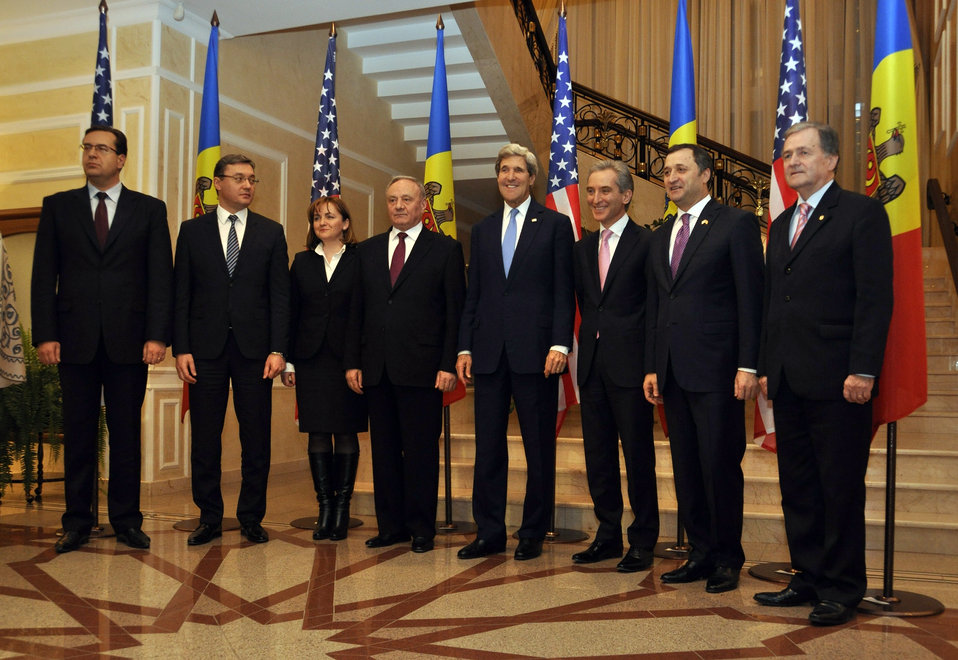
Secretary Kerry Poses for a Photo With Moldovan Leaders

U.S. Secretary of State Kerry poses for a photo, from left to right, with Democratic Party leader Marian Lupu, Parliament Speaker Igor Corman, Foreign Minister Natalia Gherman, President Nicolae Timofti, Prime Minister Iurie Leanca, Liberal Democratic Party leader Vlad Filat, and Liberal Reform Party Leader Ion Hadarca, after their meeting in Chisinau, Moldova, on December 4, 2013.